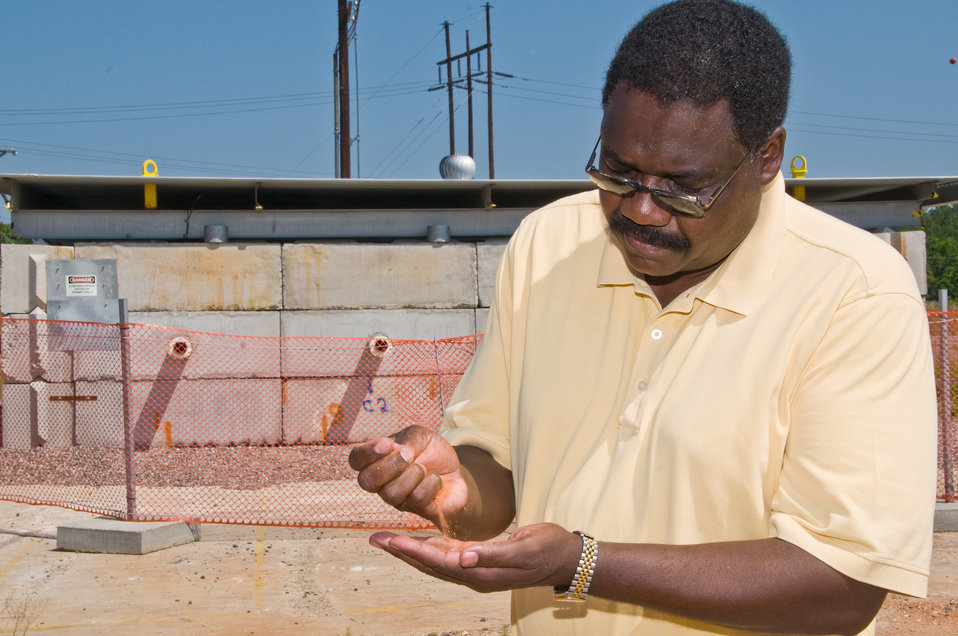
Savannah River Nuclear Solutions Control Account Manager Joao Cordoso-Neto

Joao Cordoso-Neto, Savannah River Nuclear Solutions Control Account Manager for the D-Area Thermal Detritiation Unit Project, examines soil treated at high temperatures. The D-Area Detritiation Unit is in the background.